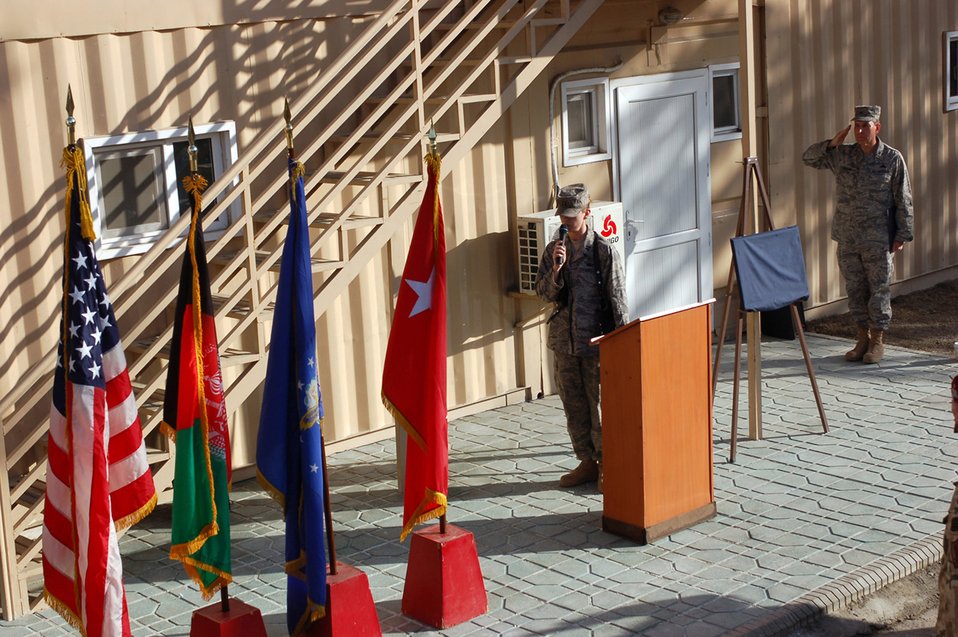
Camp Eggers officials dedicate building to fallen Airman

Capt. Jennifer Mack sings the national anthem during a memorial dedication to a fallen Airman March 2 at Camp Eggers, Afghanistan. Master Sgt. Randy Gillespie was killed in action in July 2007 while serving as an embedded training team senior mentor with the Afghan national army 207th Corps in Herat. Captain Mack is assigned to the Camp Eggers Morale, Welfare and Recreation Office.